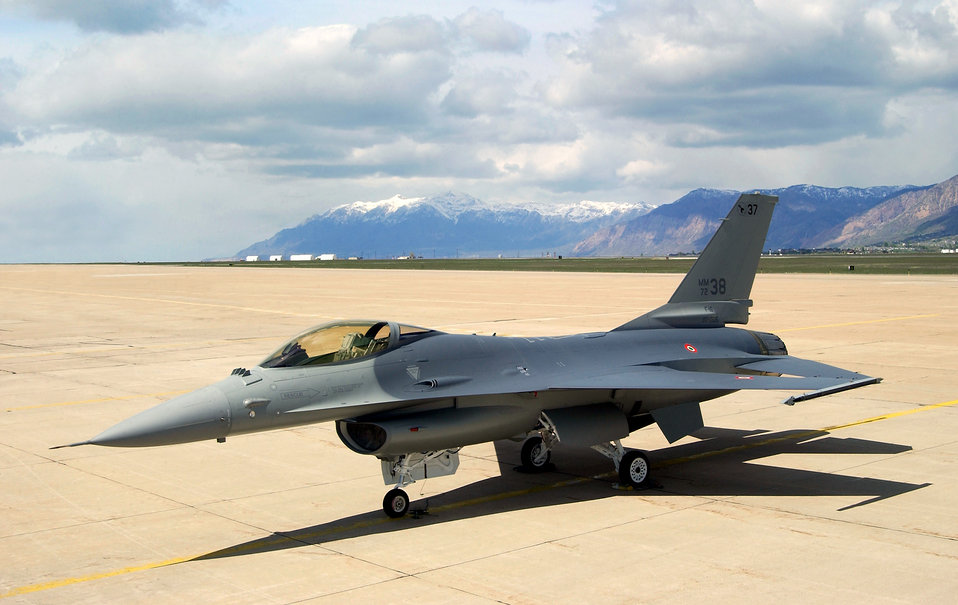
Italian falcon

HILL AIR FORCE BASE, Utah (AFPN) -- Italian defense officials accepted the first of 34 modified and refurbished F-16 Fighting Falcon A and B models from Ogden Air Logistics Center experts here May 16.